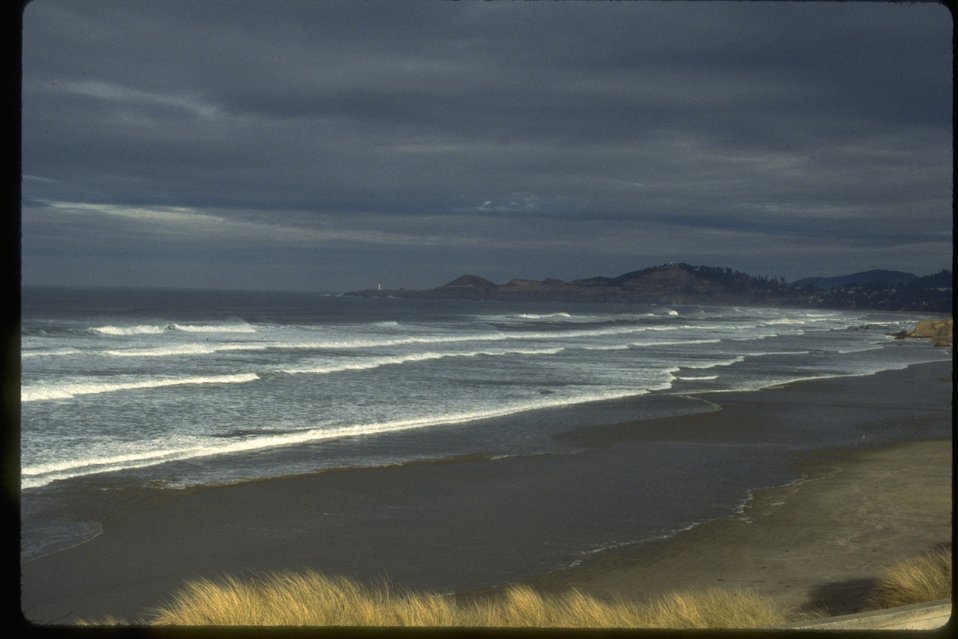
A distant picture taken of Yaquina Head ONA, taken from Nile Beach.